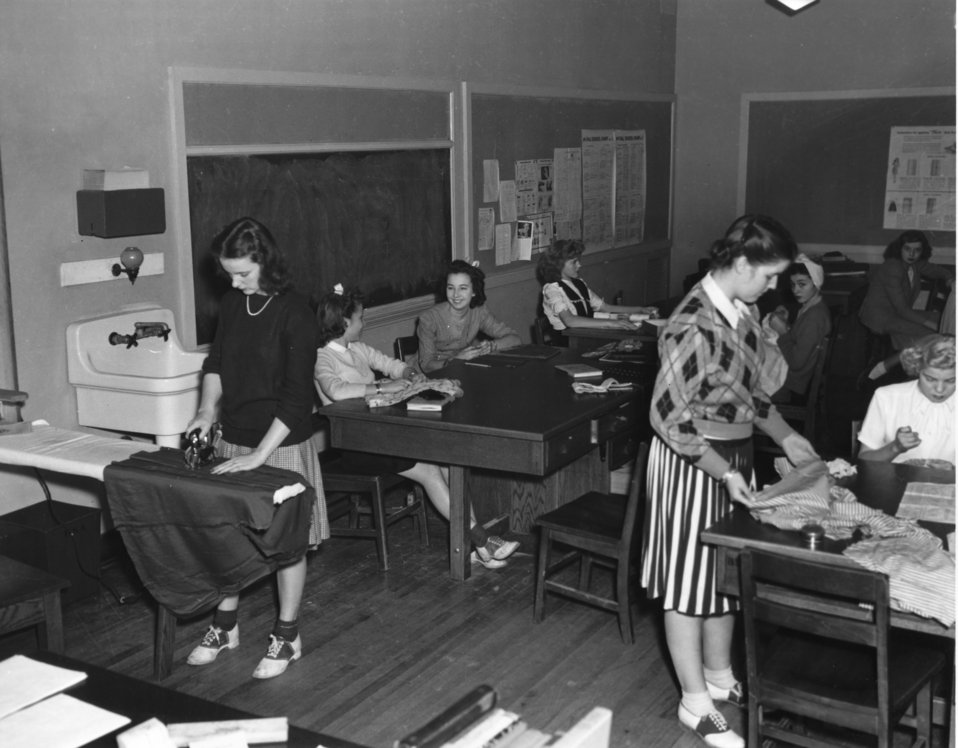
Schools at Oak Ridge